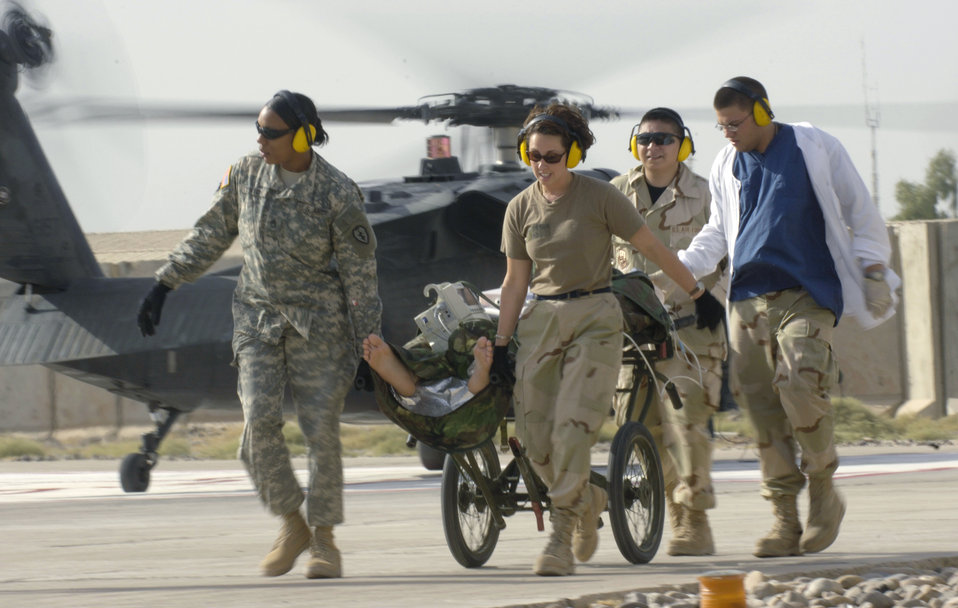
Medical specialists on the job

Army Staff Sgt. Tanisha Denton, Staff Sgt. Stacy McGill and Senior Airman Armando Pena assist Senior Airman Brett Batson in transporting a wounded Soldier from a helicopter into the Balad Air Base, Iraq, hospital Oct. 1.